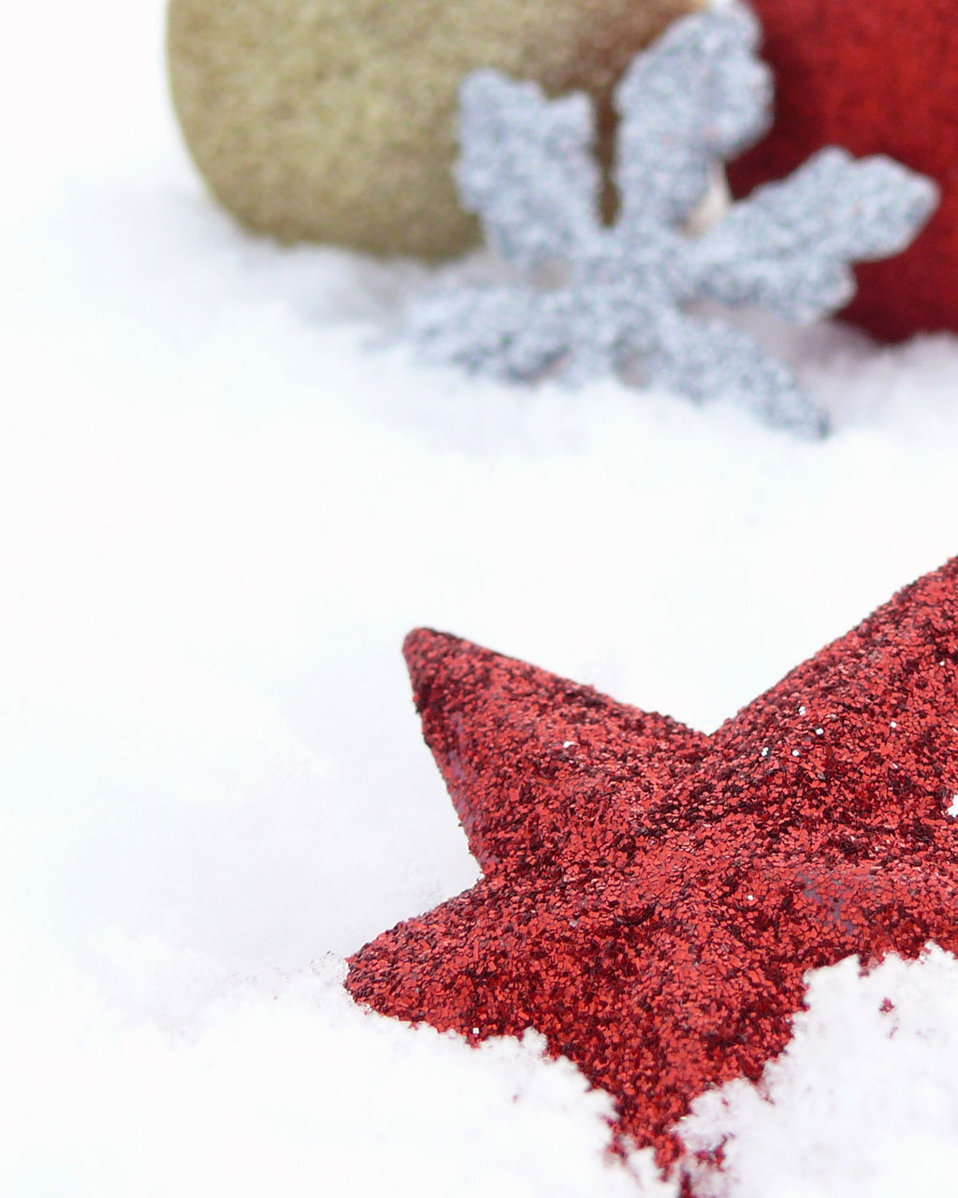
Christmas decoration.